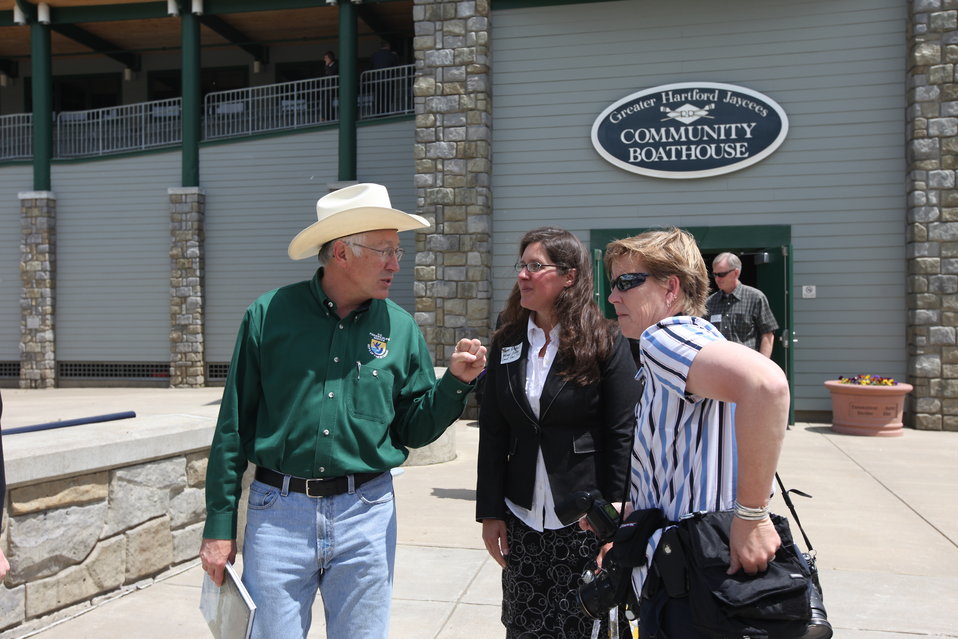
Sec. Salazar at Hartford Community Boathouse

Secretary of the Interior Ken Salazar speaks with attendees at the Connecticut River Blueway designation event.